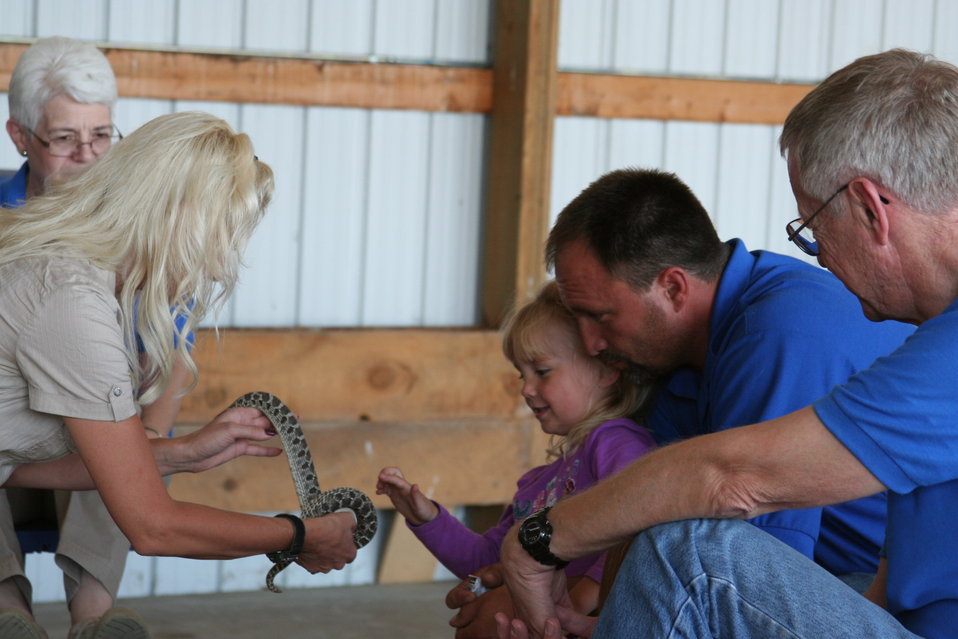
2011 Huron Prairie Fest